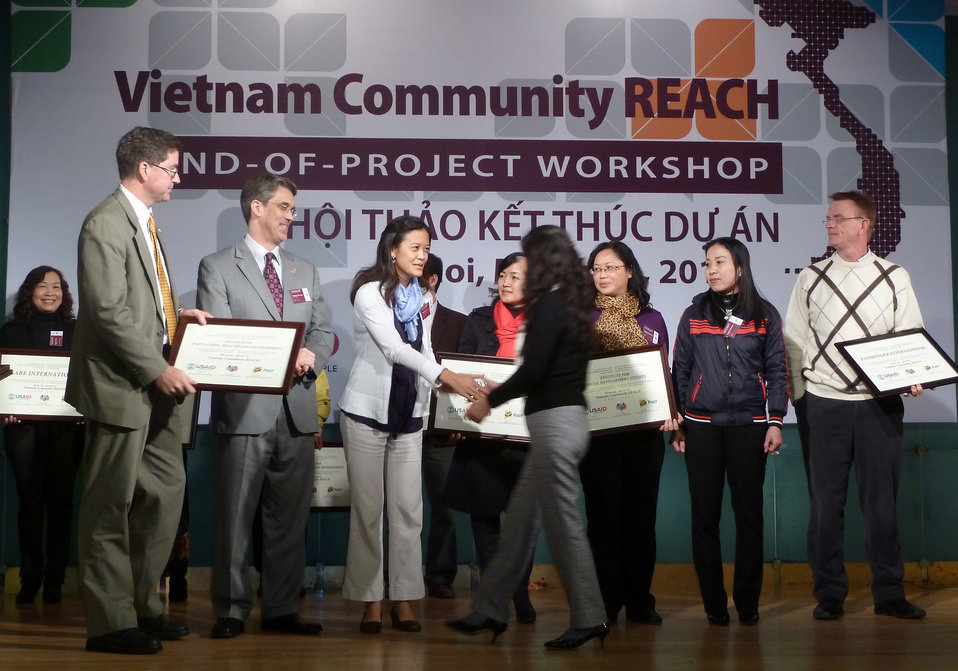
USAID, PEPFAR, and Pact award certificates to local and international partners for their work in addressing HIV in Vietnam

Community REACH project close-out with USAID and implementing partner, Pact